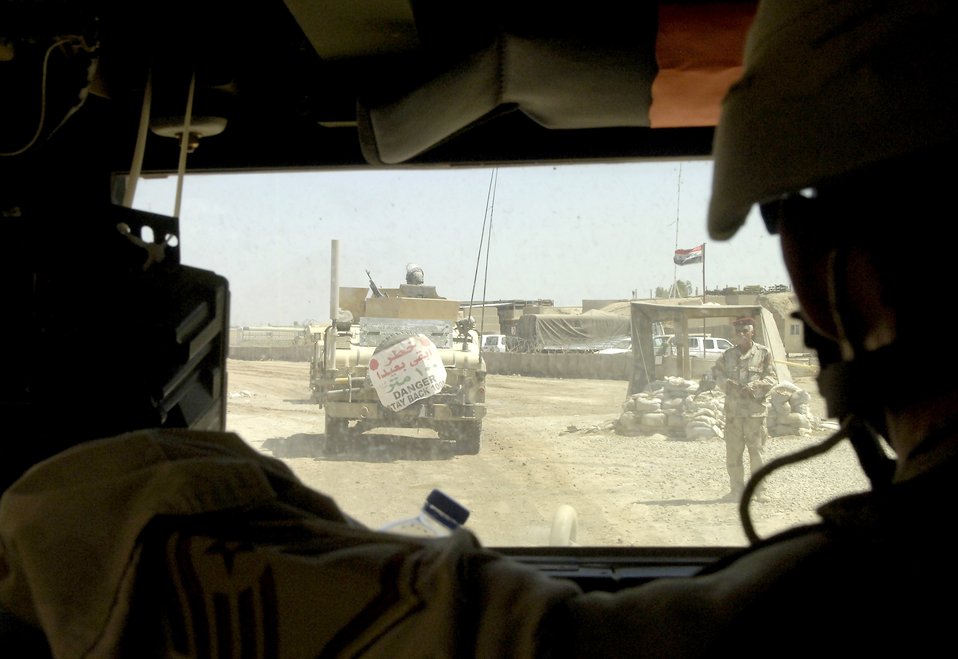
Airmen train Iraqi soldiers on base defense

Master Sgt. Tony Pesson observes the operations of the 1st Iraqi Army Division/Iraqi Intervention Forces, as his convoy enters the base on Thursday, May 25, 2006. Sergeant Pesson is the NCO in charge of Air Force Base Defense Unit Team 3602, which advises and trains the Iraqi Army on base defense procedures.